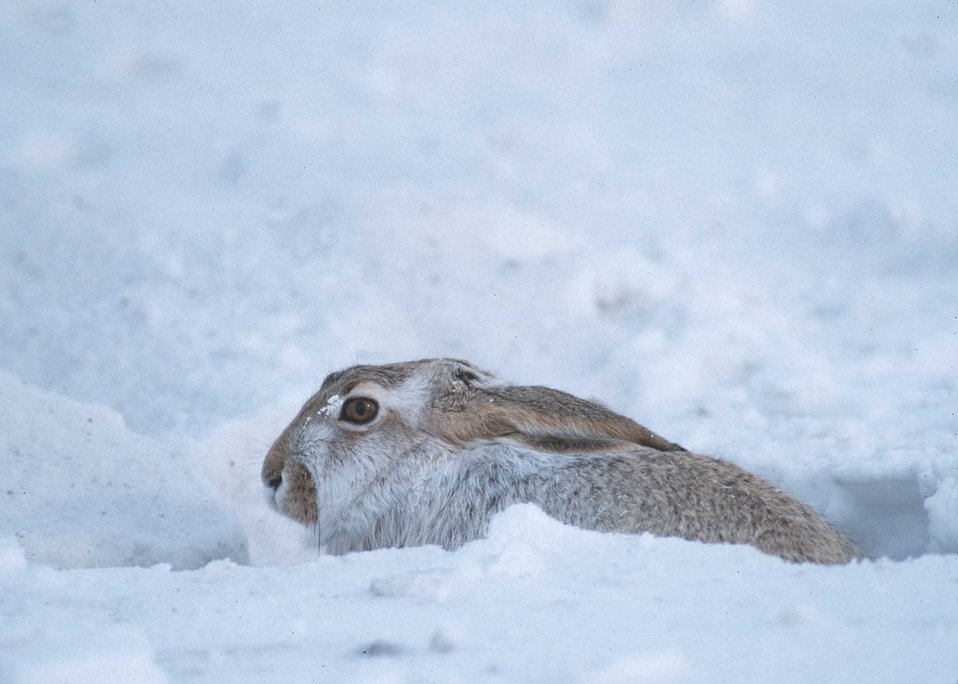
A jackrabbit needs habitat for survival in an Iowa winter.